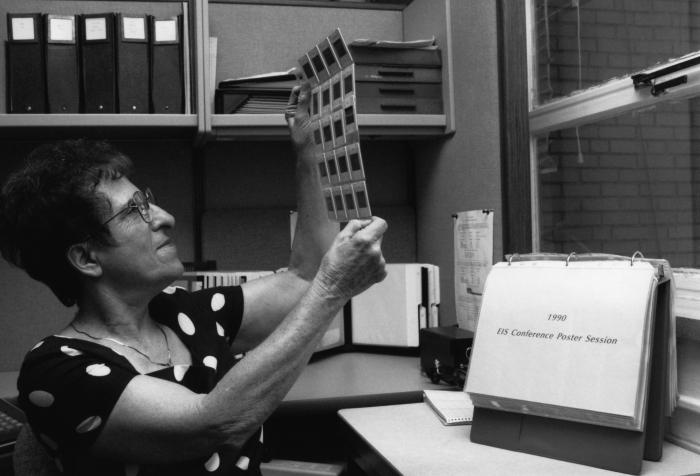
This 1992 photograph showed Centers for Disease Control employee Ruth Kurtz, as she was reviewing 35mm slides that had been taken at a 1990 EIS conference, and were to be used in a slide show presentation.